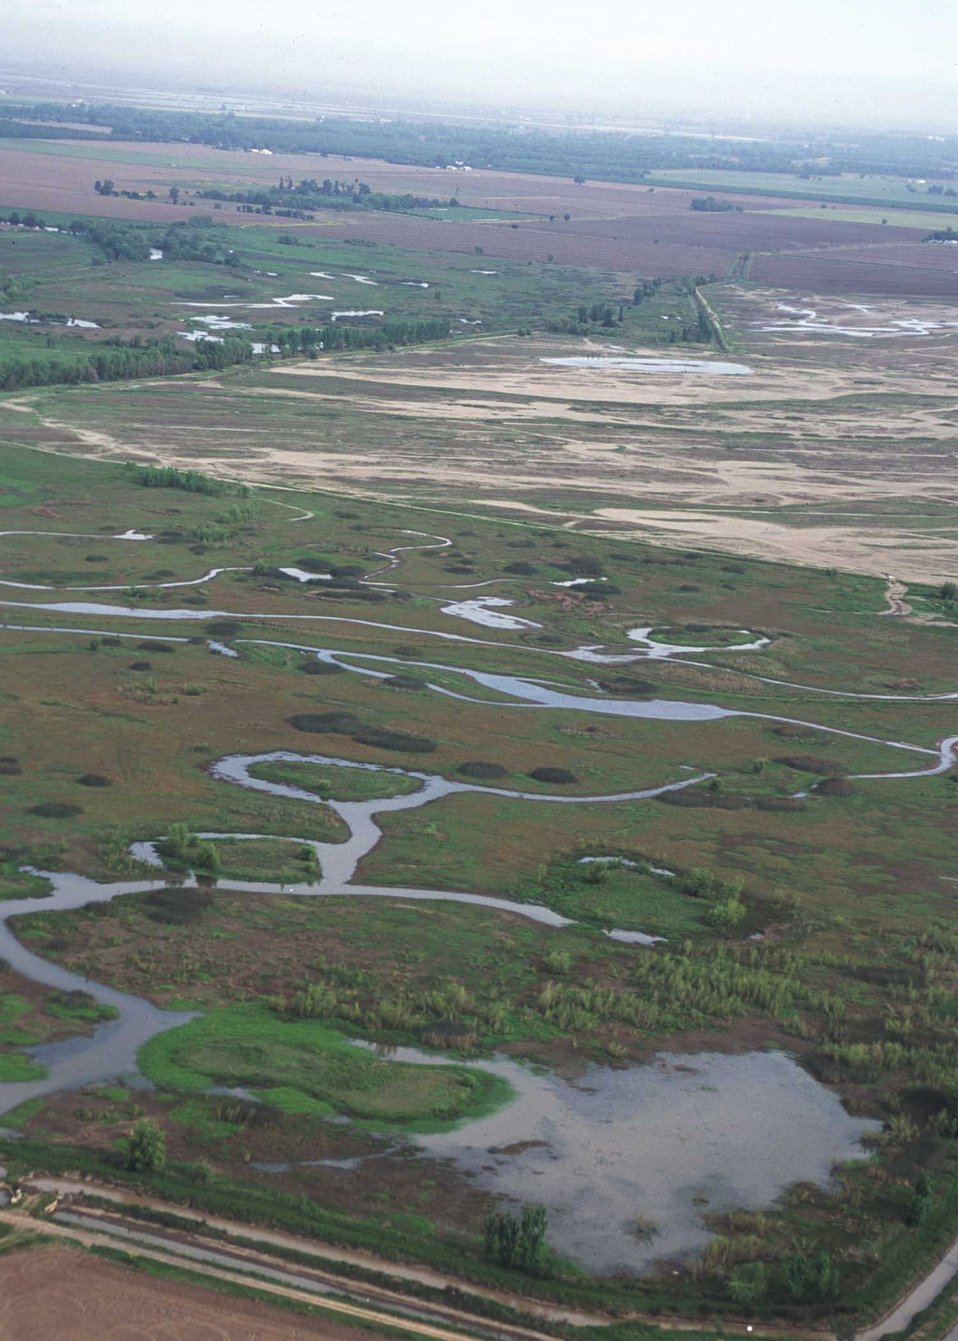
Aerial of wetlands in Butte County, CA.